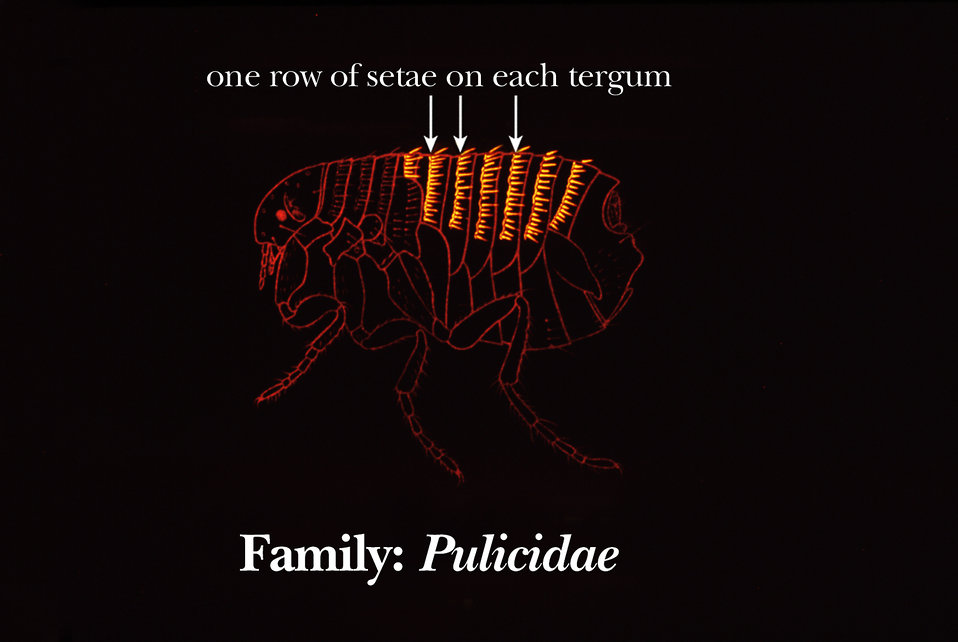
Fleas in the family Pulicidae are distinguished by the presence of one row of setae on each of their abdominal terga.